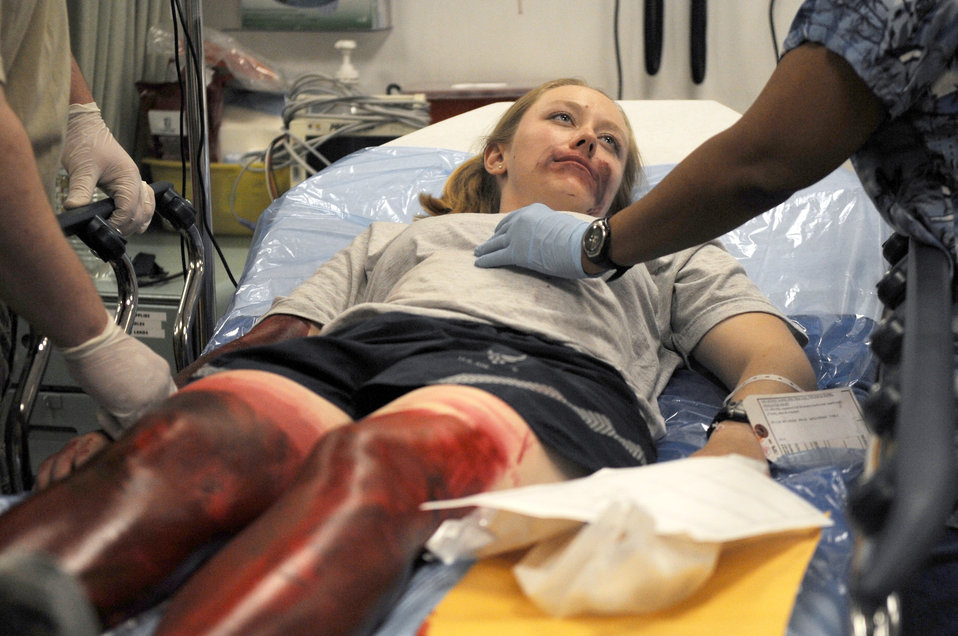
Airmen test emergency response at Joint Base Balad

Senior Airman Kara Grizzle receives simulated medical attention at the Air Force Theater Hospital during a major accident response exercise June 5 at Joint Base Balad, Iraq. The scenario was a downed aircraft in which she sustained burns on 30 percent of her body. Airman Grizzle is a 332nd Expeditionary Civil Engineer Squadron logistics journeyman.